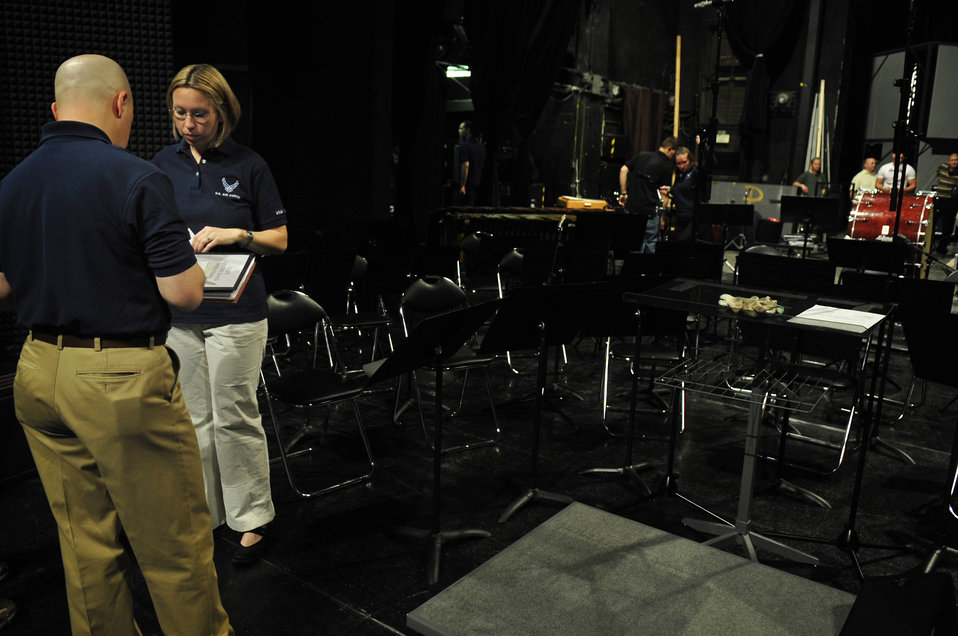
USAFE Concert Band on tour

Maj. Matthew Henry and Staff Sgt. Rachel Trimble discuss last minute details before a performance of the United States Air Forces in Europe Band May 4, 2011, in Bratislava, Slovakia. The USAFE concert band is on tour through three countries, performing at seven locations as part of a building partnerships capacity and community outreach initiative. Major Henry is the commander and conductor of the USAFE Band. Sergeant Trimble is a vocalist and operations representative with the USAFE Band.